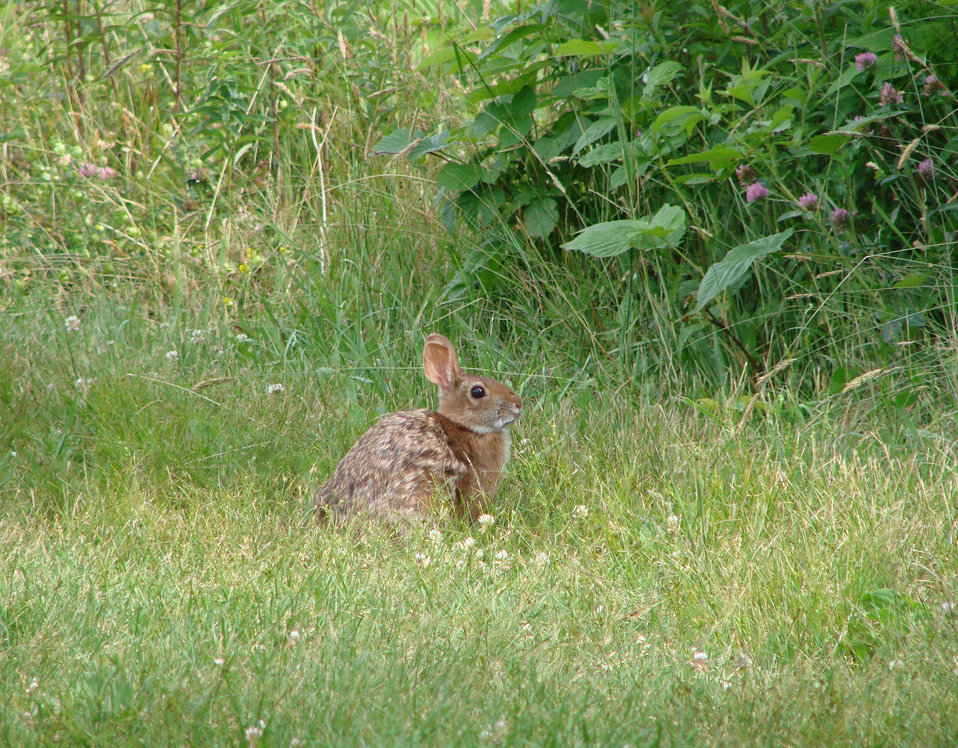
Photo of the Week - New England Cottontail (NH)

Photo of the Week - 12/9/13

In areas across southern New Hampshire, efforts are underway to conserve the natural habitat of the region's only native rabbit, the New England cottontail.